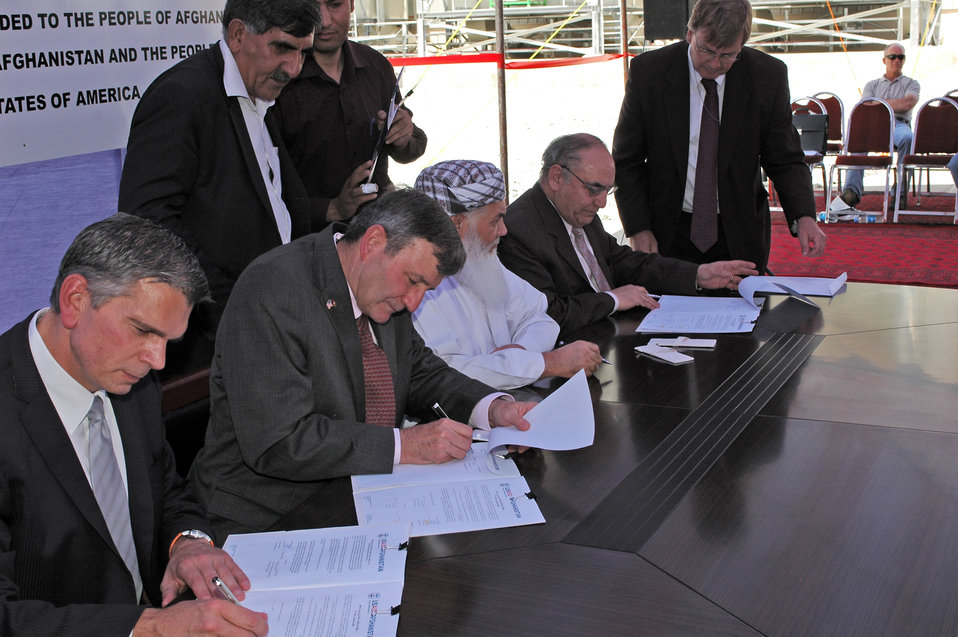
105 MW Tarakhil Power Plant Handover